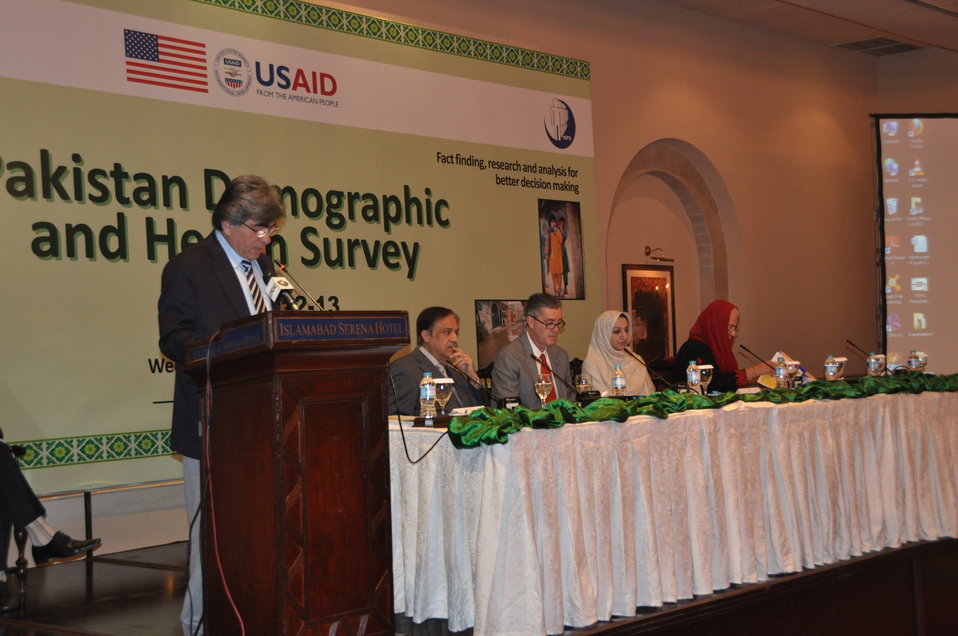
PDHS Launch

The PDHS 2012-13 survey was jointly implemented by the Government of Pakistan’s Ministry of National Health Services, Regulation and Coordination and the United States Government through the United States Agency for International Development (USAID).